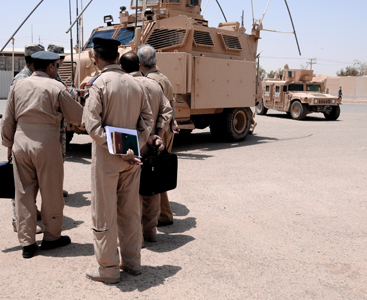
Iraqi air force leaders visit JBB

Iraqi air force leaders attend a conference June 8 and 9, 2011, at Joint Base Balad in Iraq. Iraqi air force leaders visited different organizations on base to learn how U.S. Airmen operate an Air Force base.